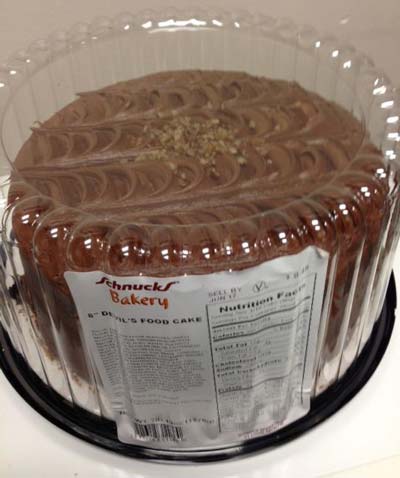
RECALLED – Cake

June 13, 2014 – Schnucks Bakery Recalls Devil’s Food Cakes Topped With Undeclared Pecans.